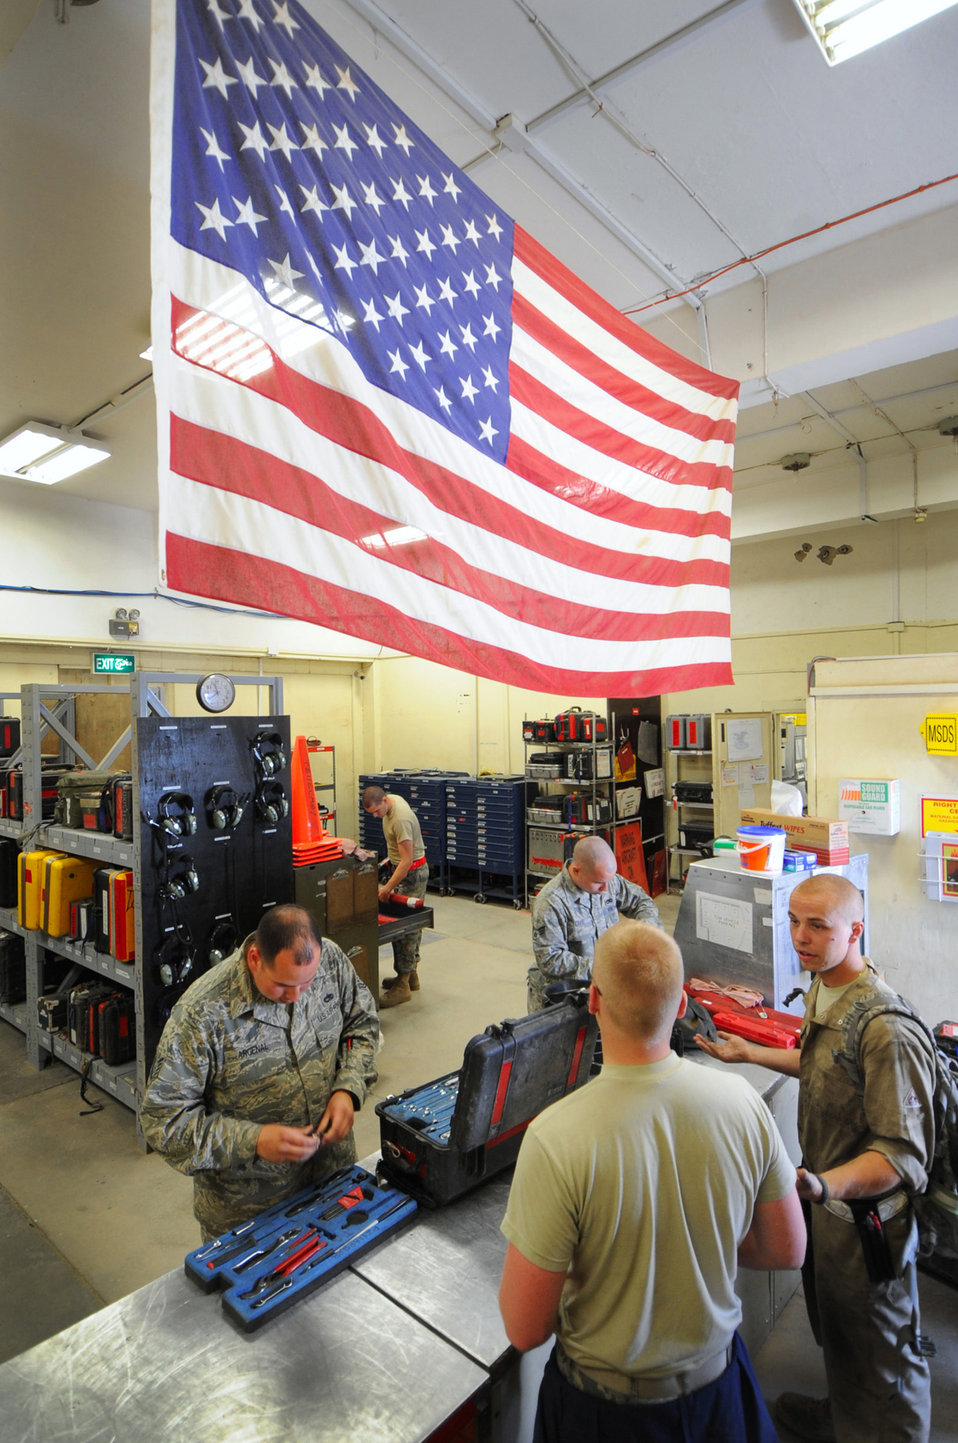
Airmen maintain the fight

Airmen check tool kits for serviceability before issuing them to maintainers April 6, 2011, at an air base in Southwest Asia.